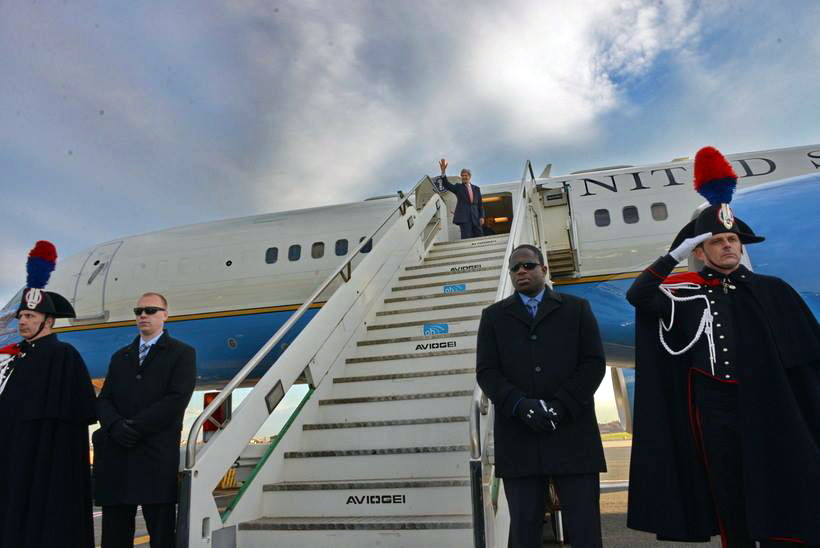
Secretary Kerry Waves Before Departing Rome

U.S. Secretary of State John Kerry waves goodbye as he departs Rome, Italy, on March 7, 2014.